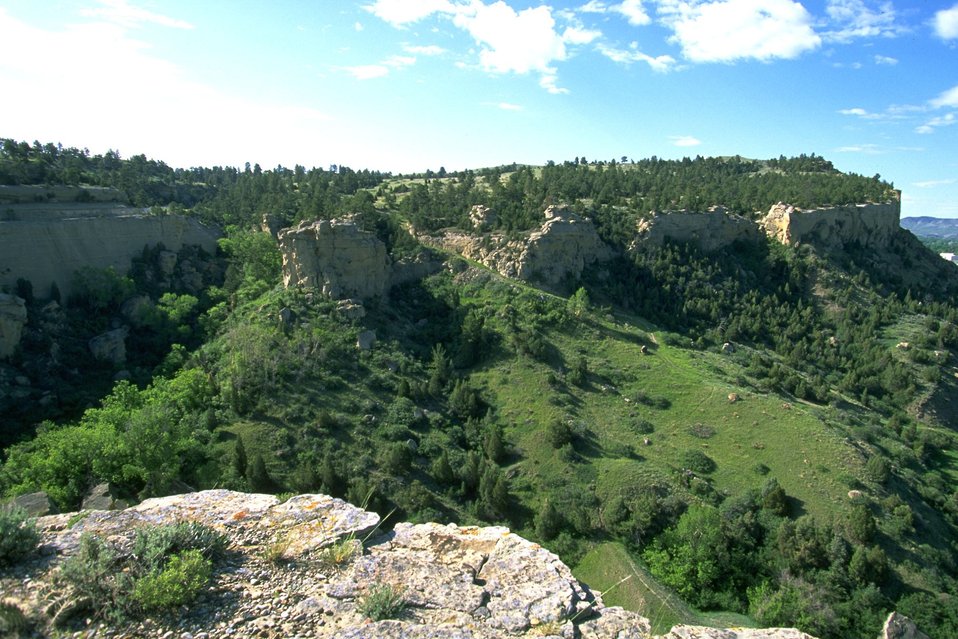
Sandstone cliffs east of Billings in the Four Dances Natural Area